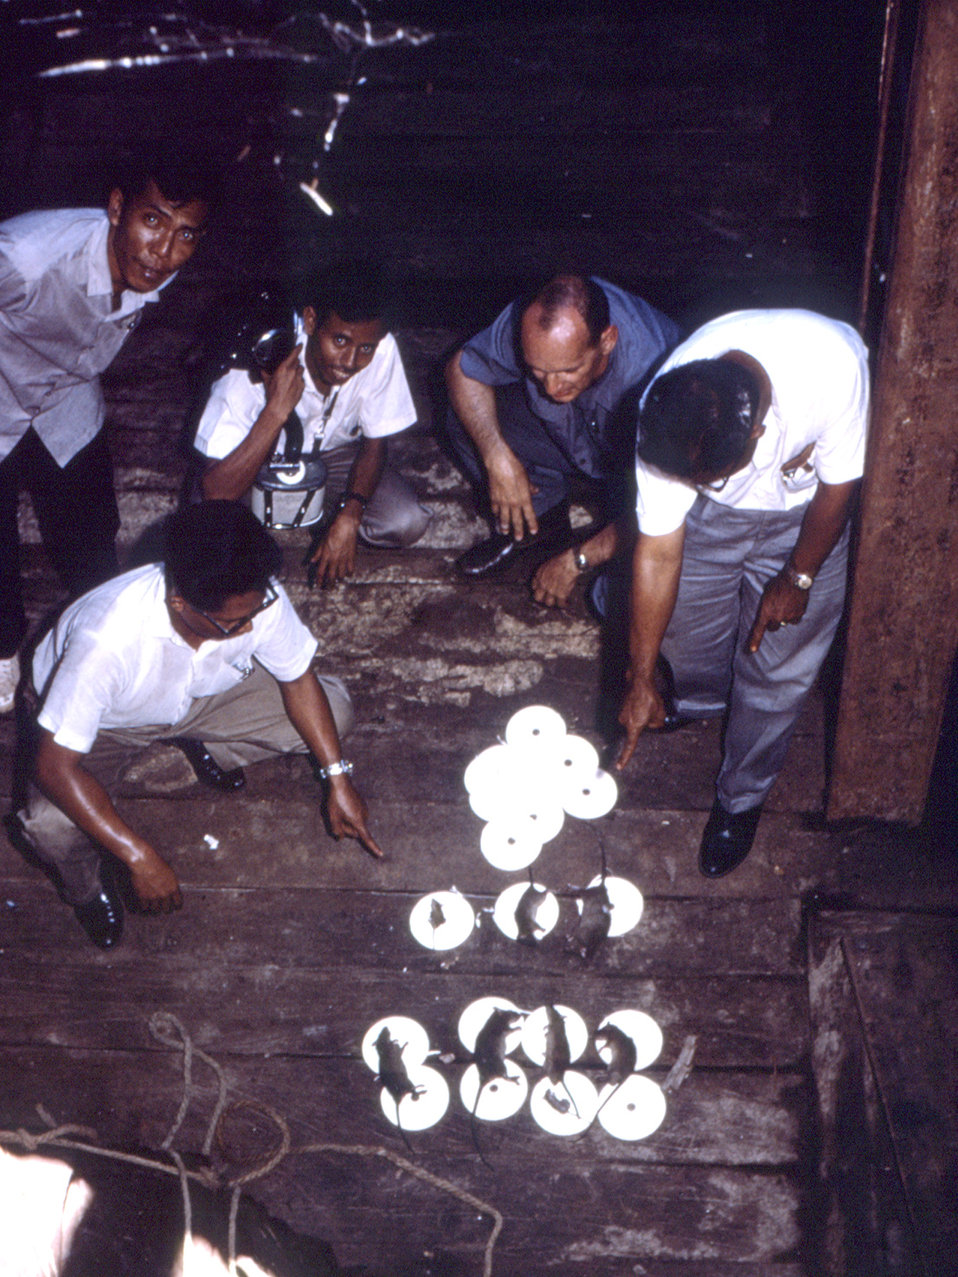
These rats were collected from ships in an Indonesian port during the plague epidemic of 1969.